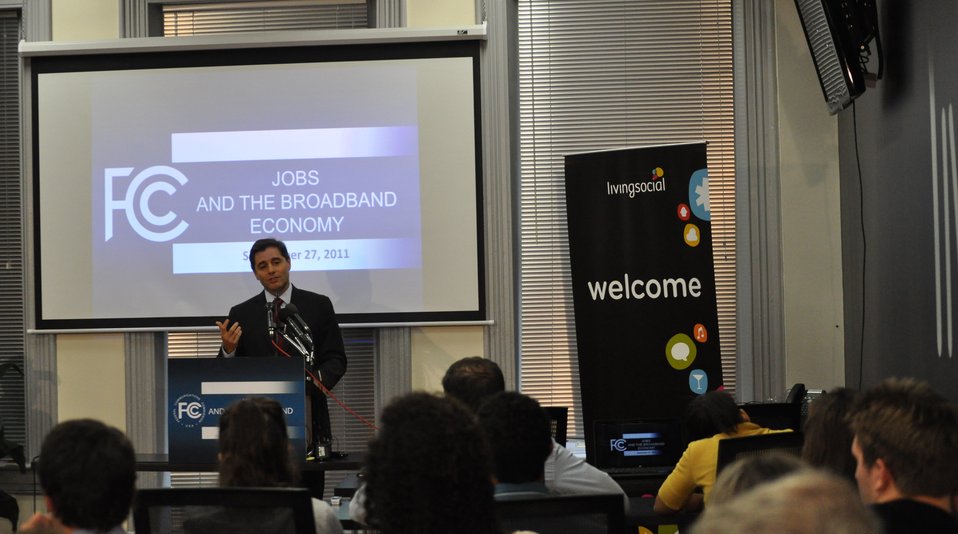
Jobs and the Broadband Economy

FCC Chairman Genachowski